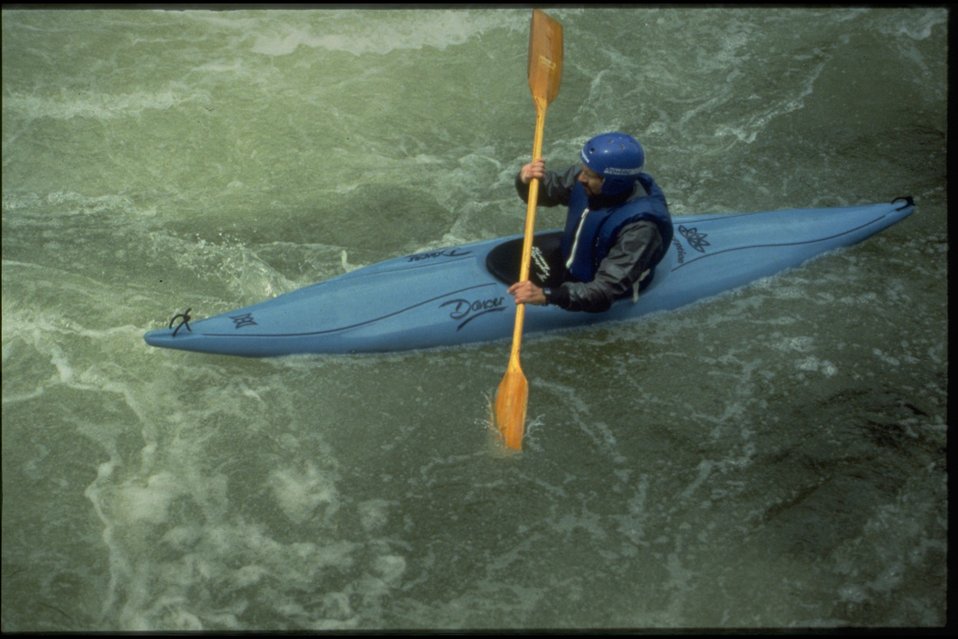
Rogue River - Wild section, Rainie Falls. Kayak.